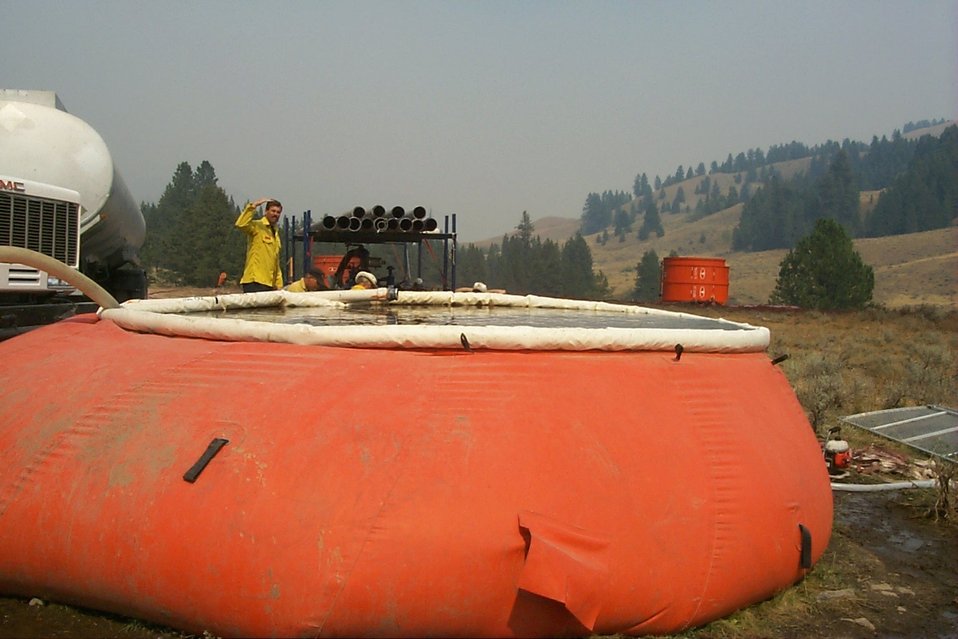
Field water storage Fire Clearwater Fire Salmon Field Office USRD Upper Snake River District